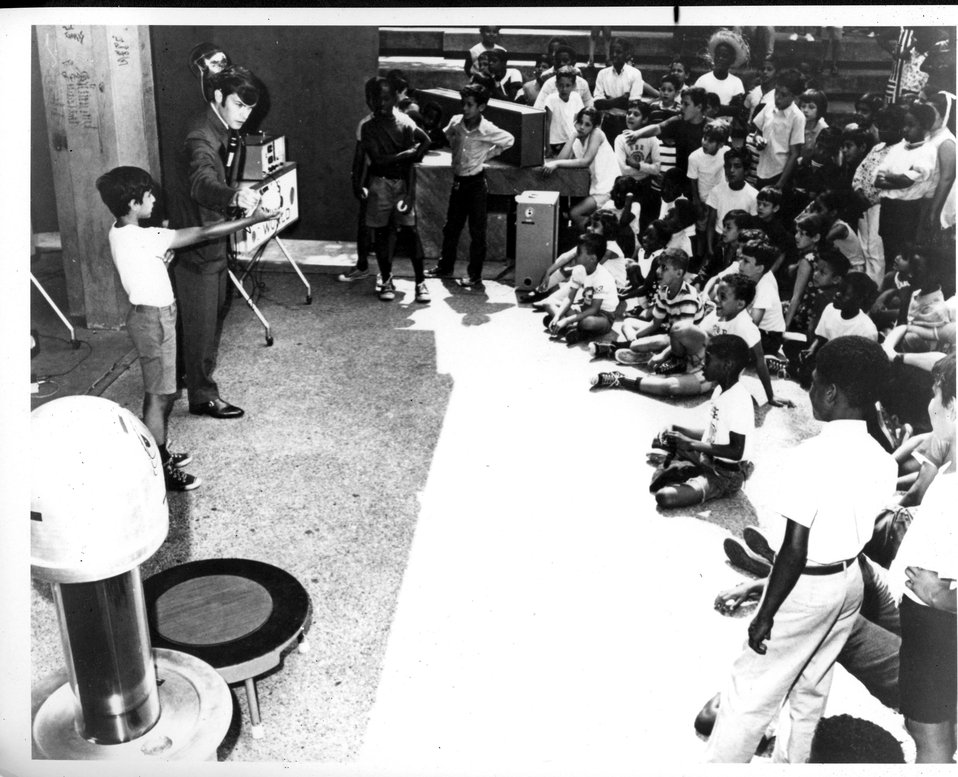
The 'This Atomic World' lecture-demonstrations moved out of the high school circuit into New York City's neighborhood youth and recreation centers during the summer of 1970. c. 1971